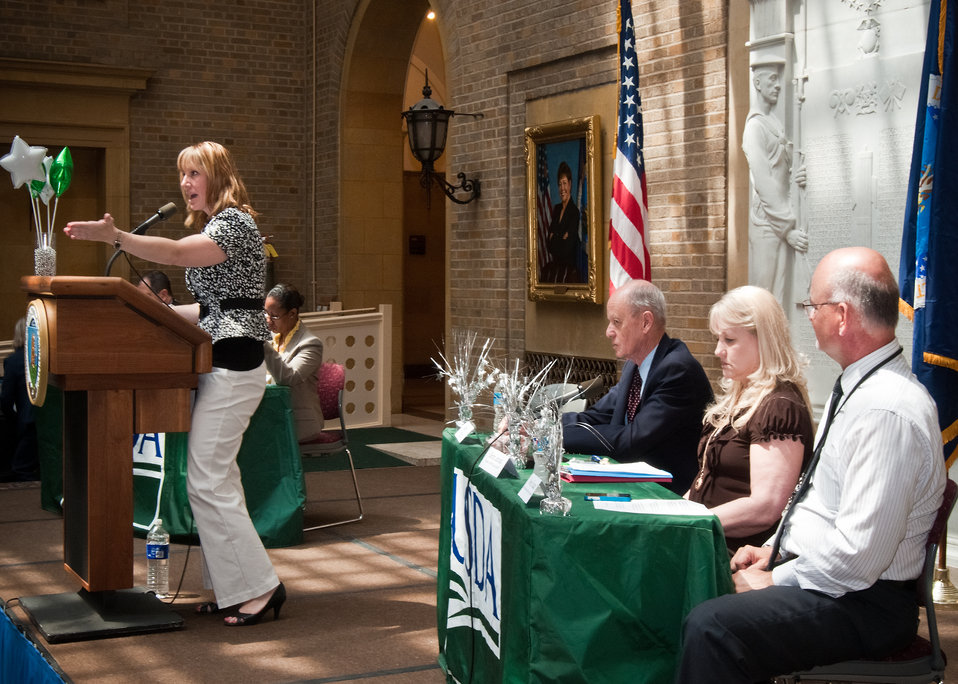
Mika Cross, Office of Human Resources Management, Departmental management welcomes employees to a “Telework Program Party/Brown Bag” event on the patio of the Jamie Whitten Building of United States Department of Agriculture, in Washington, DC, on Tuesday, June 7, 2011. To Cross’s right are panel members Morris Tate, Director for Business Services, Office of Operations, Debra Arnold, Rural Development and President, AFSCME Union Local 3870 (USDA), Owen Unangst, Director, Innovations and Emerging Technologies, Office of the Chief Information Officer. The event included an interactive telework panel and exhibits from the field of telework, telecommuting and mobile work environments. The event was open to all USDA employees, supervisors, managers, human resources staff and USDA telework program coordinators.